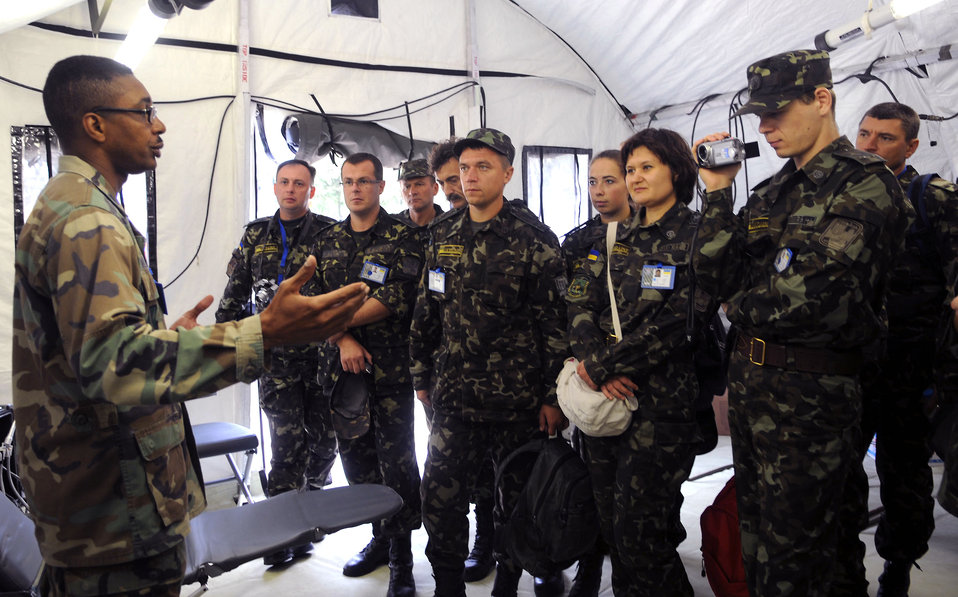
Airmen stand up medical squadron to support training exercise

Lt. Col. Raymond Williams explains the squadron's dental care capabilities to multinational troops during an exercise orientation Sept. 8, 2009, in Nis, Serbia. Airment stood up the 458th Expeditionary Medical Squadron in support of the 2009 Military Medical Training Exercise in Central and Eastern Europe Sept. 2 through 13. Colonel Williams is assigned to the 458th Expeditionary Medical Squadron.